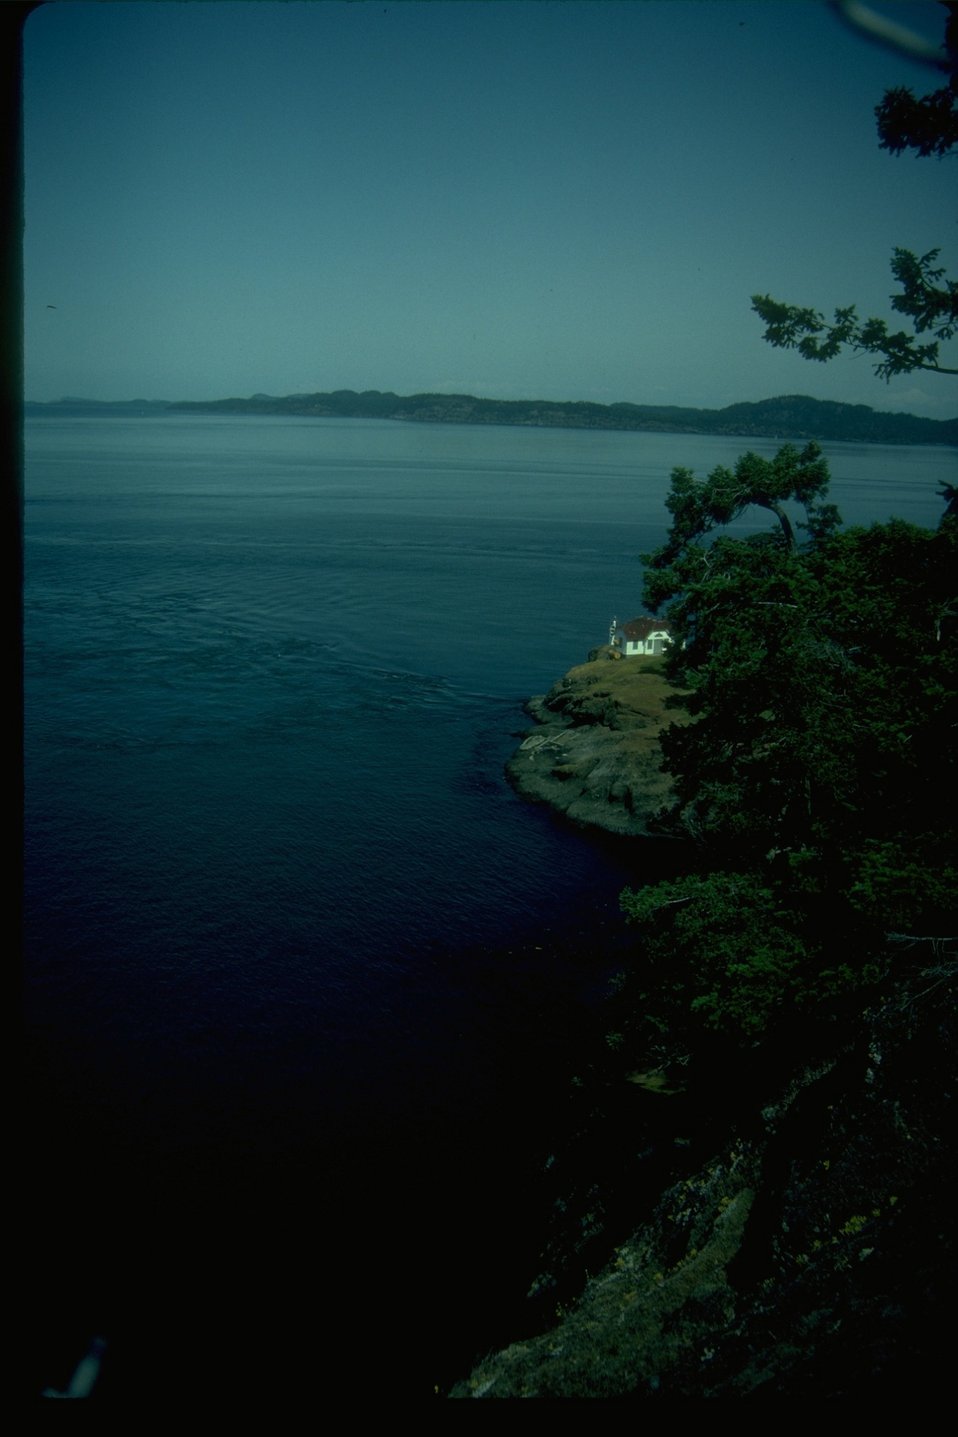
Turn Point on Stuart Island in San Juan County, Washington.